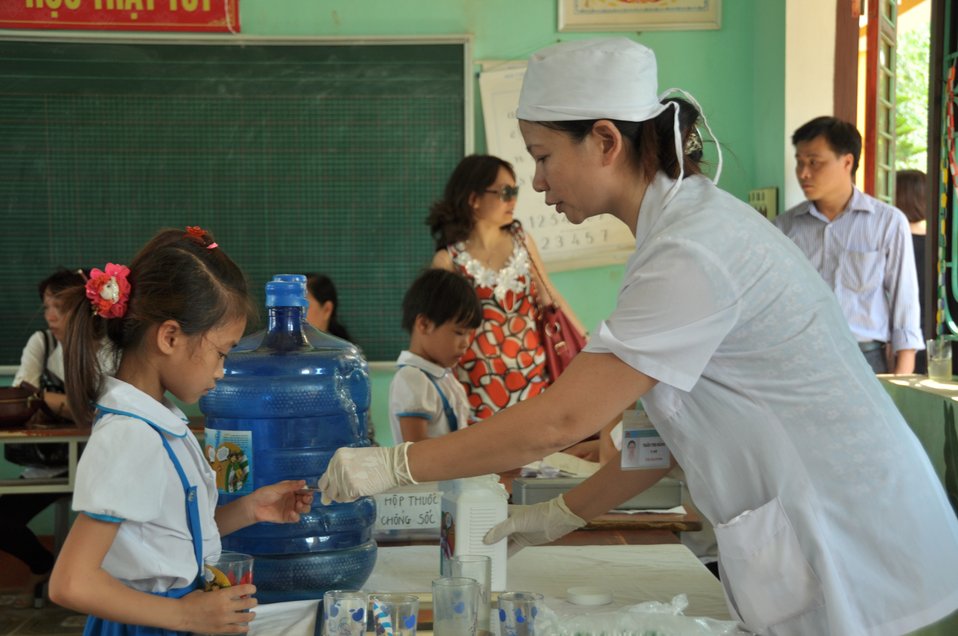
USAID supports deworming education and medication distribution in Bac Giang Province

May 20, 2013